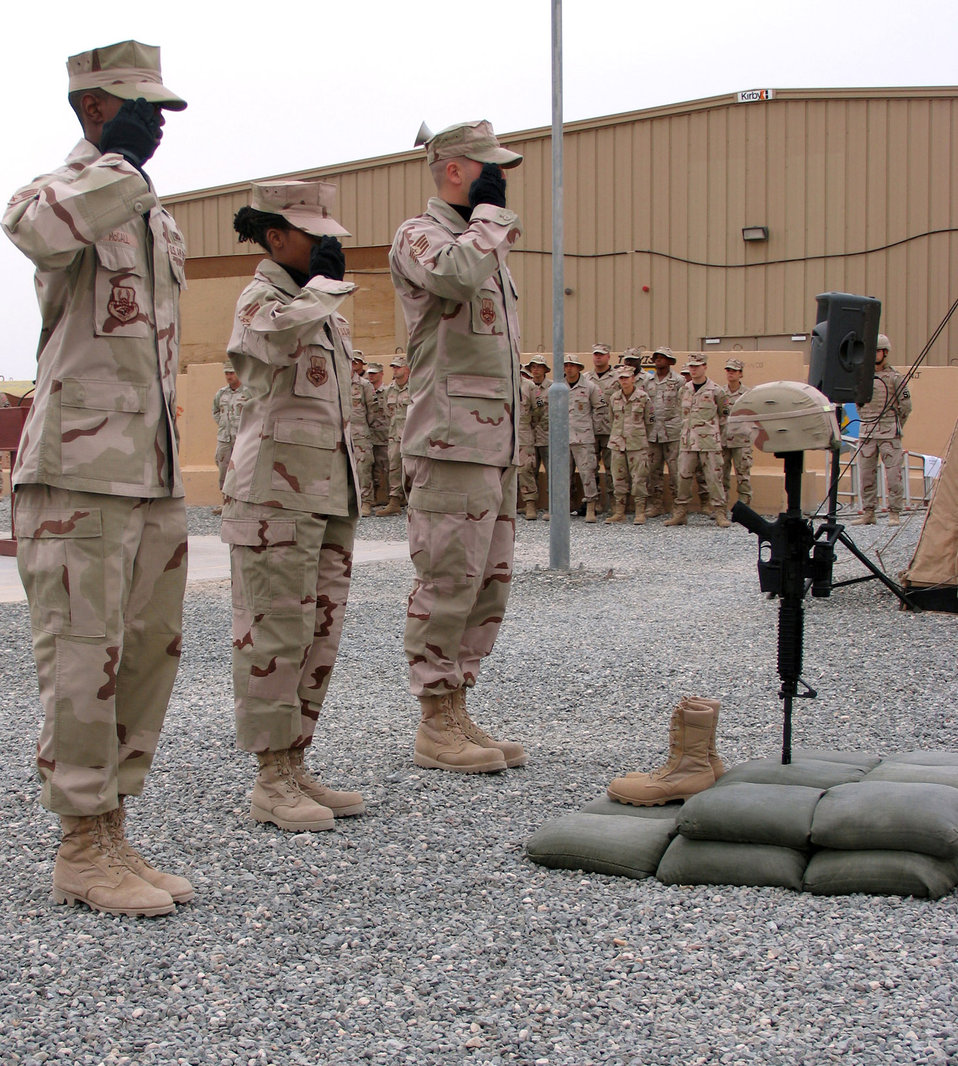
Remembrance ceremony

Members of the 386th Expeditionary Security Forces Squadron salute the display they set up during a remembrance ceremony for Airman 1st Class Elizabeth Jacobson, who was killed while on a convoy near Camp Bucca, Iraq, when her vehicle was hit by an improvised explosive device Sept. 28, 2005. She was the first female Airman killed in the line of duty supporting Operation Iraqi Freedom.